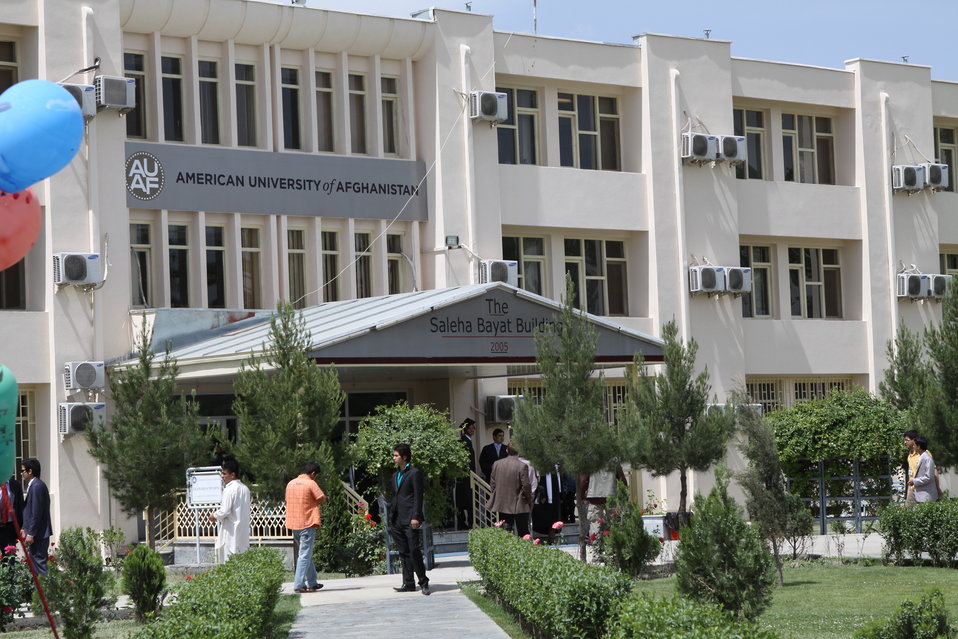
100526 AUAF Graduation 004